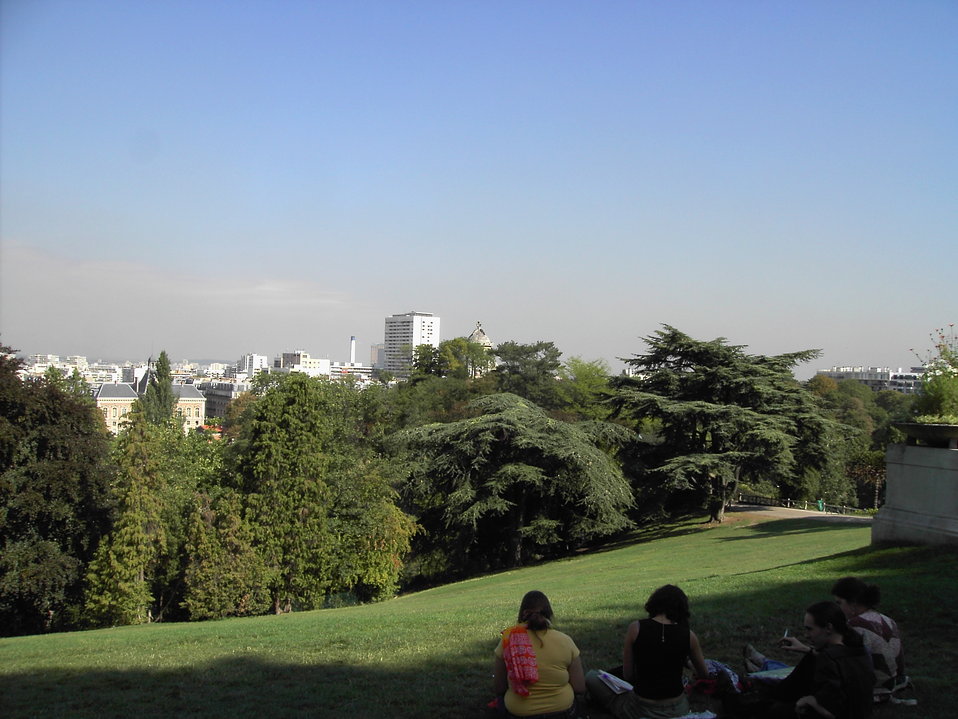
050908 Paris 140i ButtesChaumont